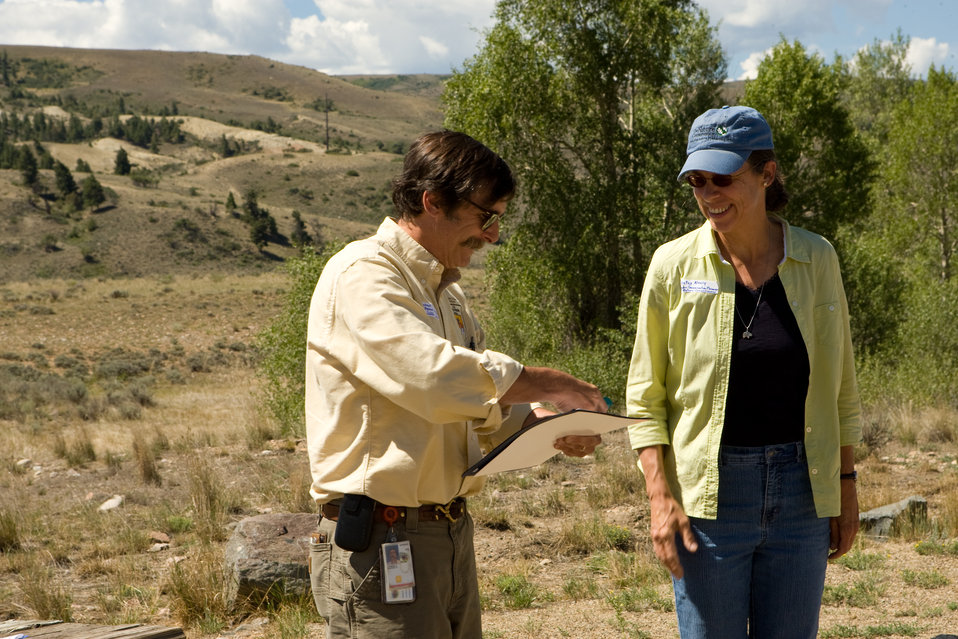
Colorado Rare Plant Conservation Initiative

The Colorado Rare Plant Conservation Initiative (RPCI) is a partnership of 23 statewide and regional agencies, private organizations, and academic institutions working to conserve 121 rare plants in Colorado. As part of these efforts the group developed the Colorado Rare Plant Conservation Strategy, developed Best Management Practices to reduce energy development impacts, addressed climate change, and developed focused strategies for the conservation of individual species at eight priority landscapes. The group has also worked to coordinate volunteer efforts for plant conservation across the state.